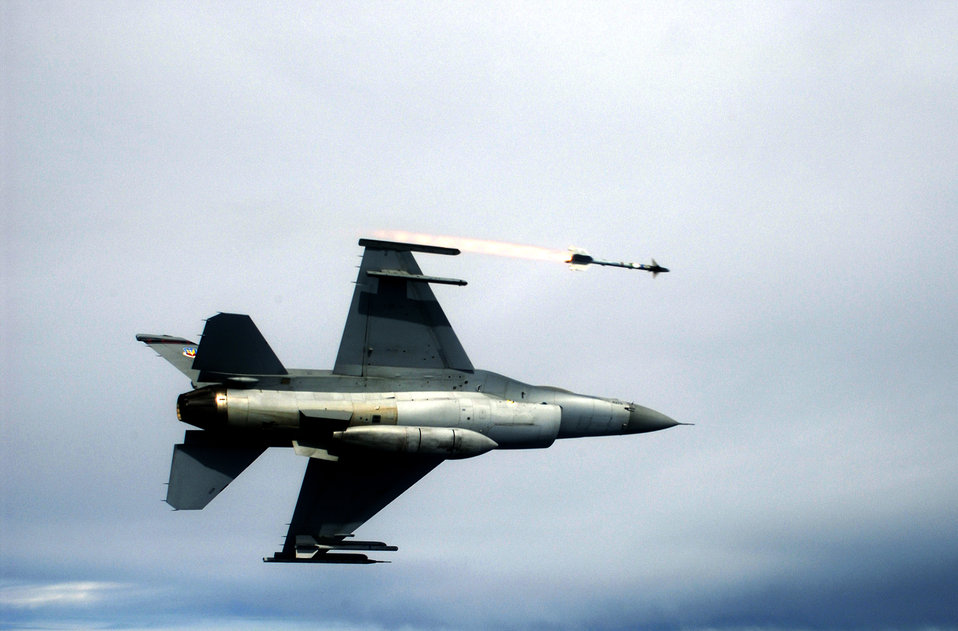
Ready, aim...

OVER TYNDALL AIR FORCE BASE, Fla. -- Capt. Nai Koh fires an AIM-9 Sidewinder heat-seeking missile from an F-16C Fighting Falcon, at an MQM-107E Streaker sub-scale aerial target drone April 20 during a Combat Archer mission. Captain Koh is an F-16 pilot with the Republic of Singapore air force and is assigned to the 428th Fighter Squadron at Cannon Air Force Base, N.M.